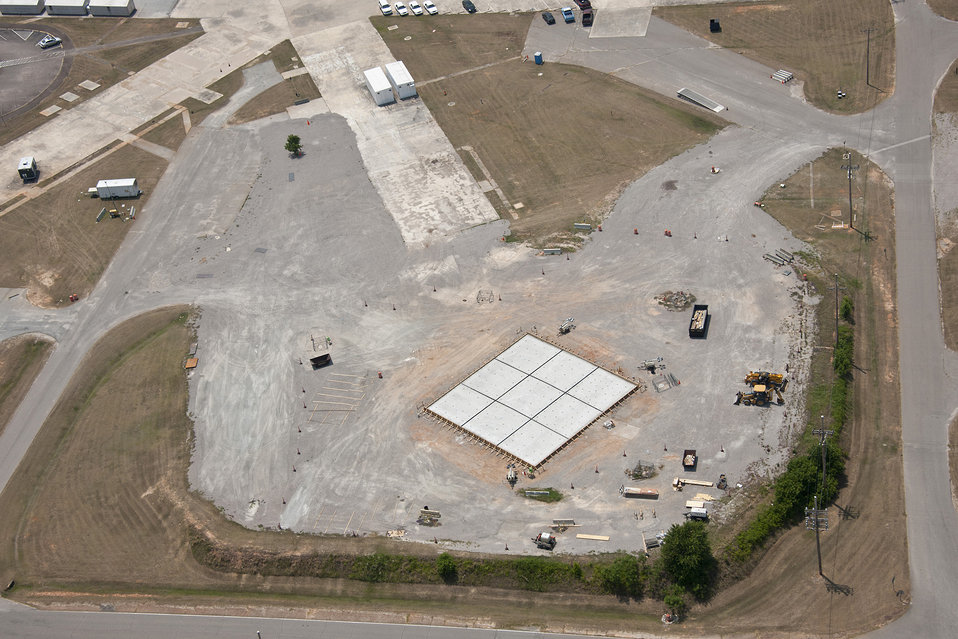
After Decomissioning - SRS

This photo shows the site of the reactor following completion of the project.